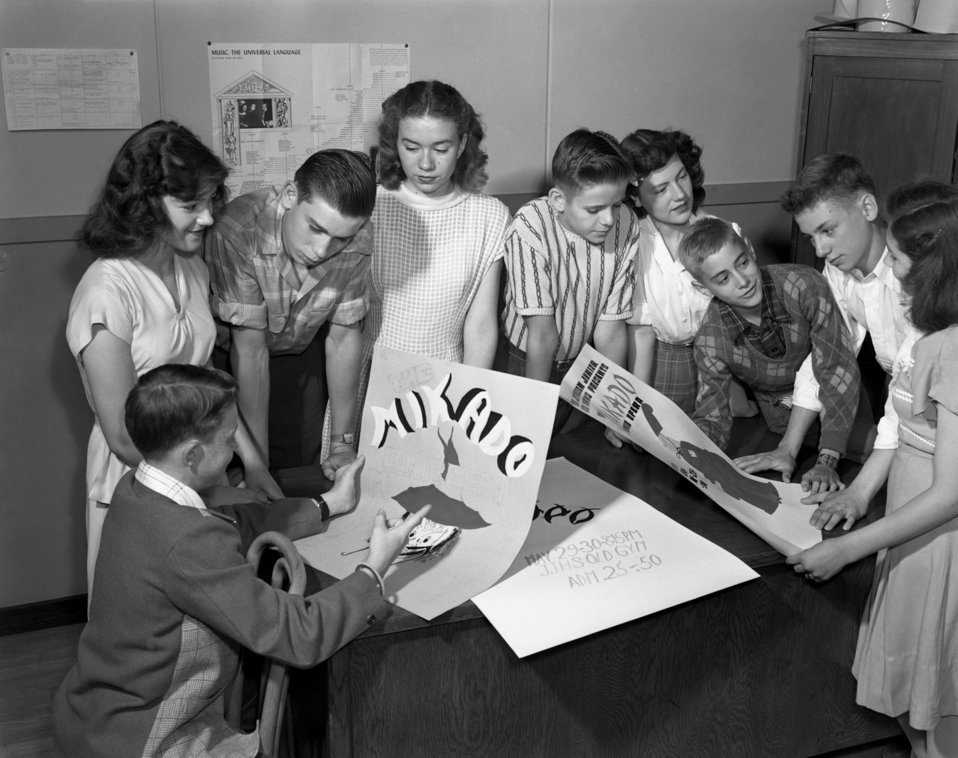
Jefferson Jr. High Mikado Oak Ridge 1947

3454-1421 DOE photo Ed Westcott 5-12-1947 Oak Ridge Tennessee